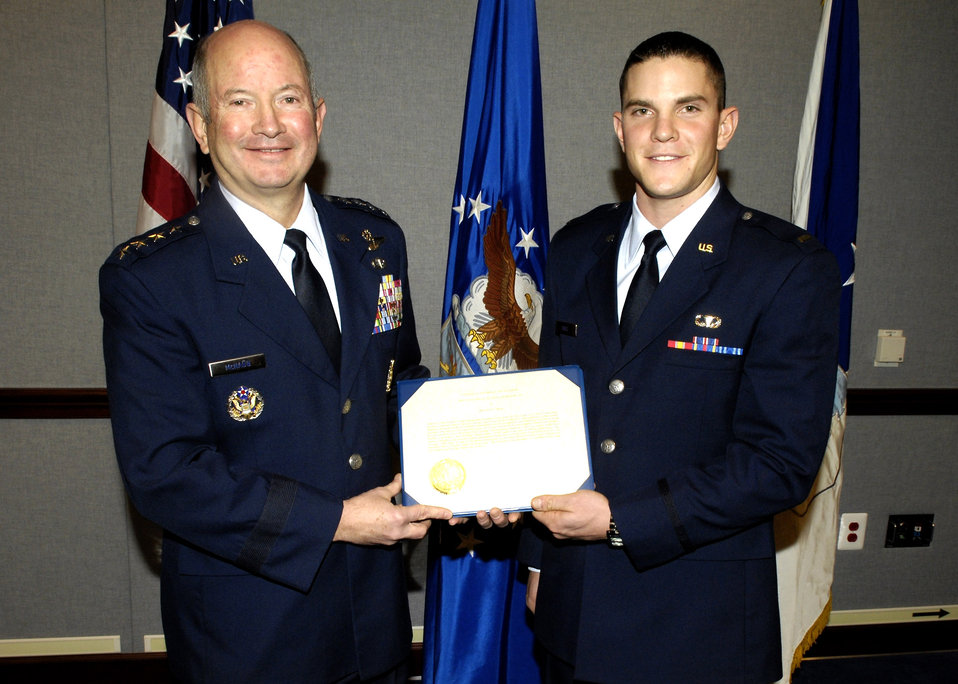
Cadet of the Year

Vice Chief of the Staff of the Air Force Gen. Duncan J. McNabb presents 2nd Lt. Brandon T. Dues with the 2007 Cadet of the Year Award. The award recognizes the most outstanding cadet in an Air Force commissioning program. Lieutenant Dues graduated from the Air Force Academy last May.